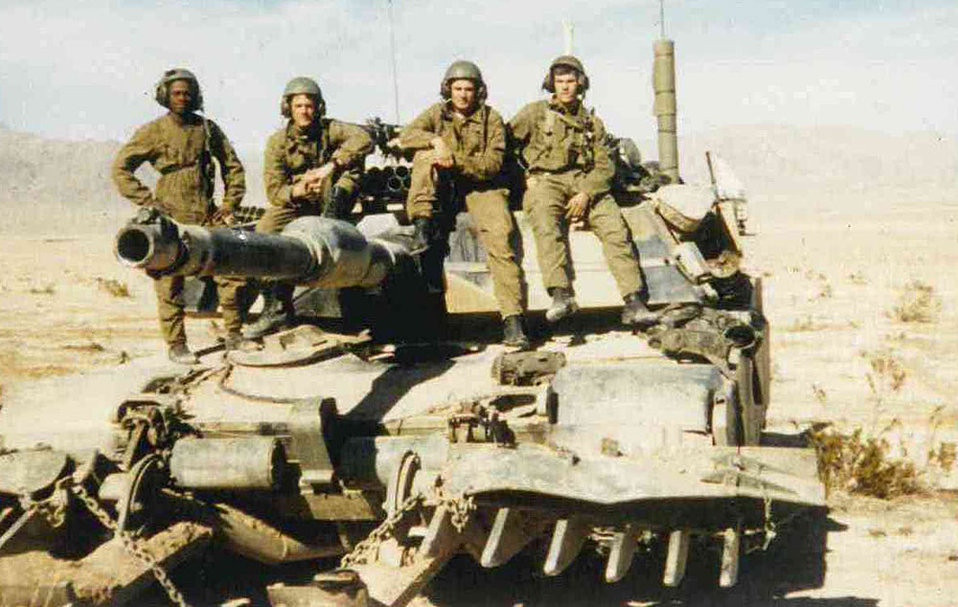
Joe Whitton

Joseph Whitton, a maintenance worker at Willapa National Wildlife Refuge in Washington, served in the U.S. Army. Here, Joe (far right) is on maneuvers in the Mojave Desert in 1995. At the time he was with the 24th Infantry Division 4-64 Armor Battalion out of Fort Stewart, Georgia, Rapid Deployment Base.